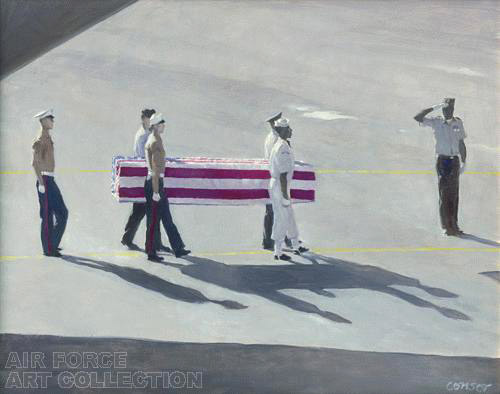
Artists document Rodeo competition

This art piece in the Air Force art collection entitled,